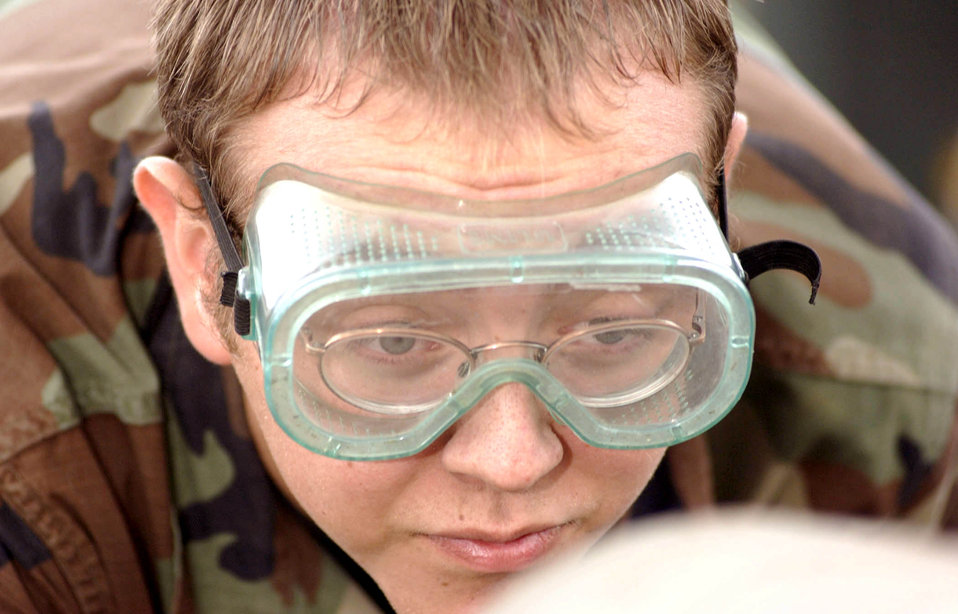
To build a better bomb

SPANGDAHLEM AIR BASE, Germany -- Airman 1st Class Jeremiah Phelps cast a careful eye while working on Mark-82 bombs during a build-up here in preparation for a live fire exercise. He is a munitions crewmember from the 52nd Equipment Maintenance Squadron.